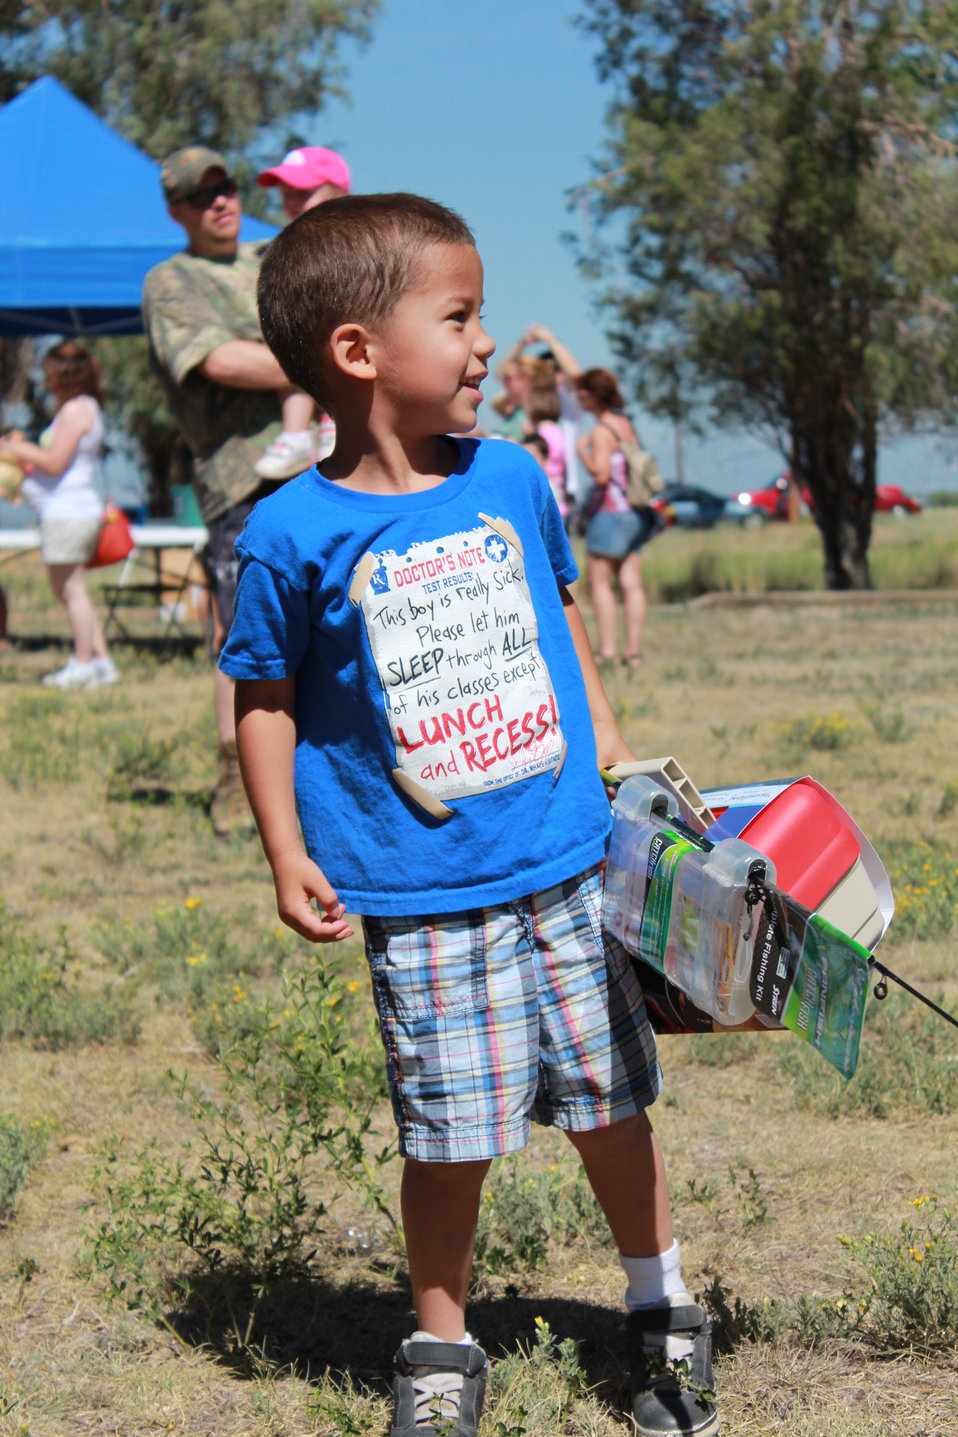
All Smiles

A young angler celebrates his new fishing gear.

Location: Lake Mary, Rocky Mountain Arsenal NWR

Credit: Jaclyn Kircher / USFWS

Photo Contest Entry #29